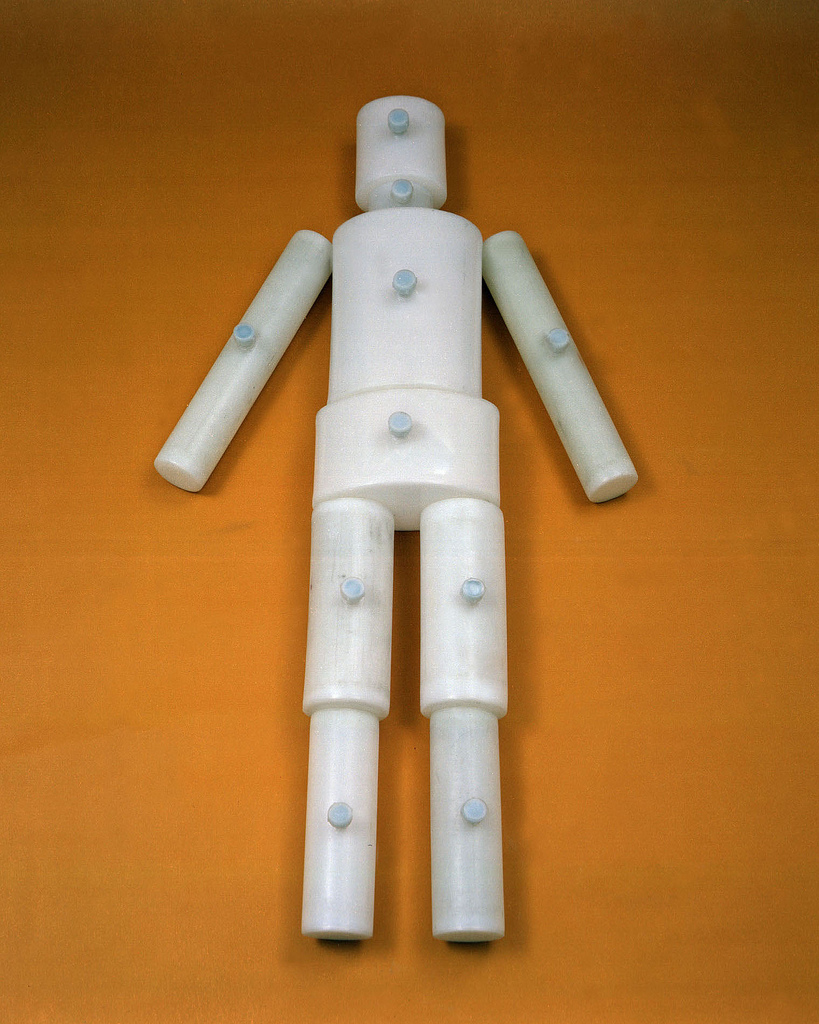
In the 747A Building, Pacific Northwest Nation Laboratory research use the BOMAH (Bottle Manikin Absorption) phantom to calibrate systems used to detect and quantify the amount of radioactive materials in workers. The Phantom simulates to geometry and tissue density of a reference human male.